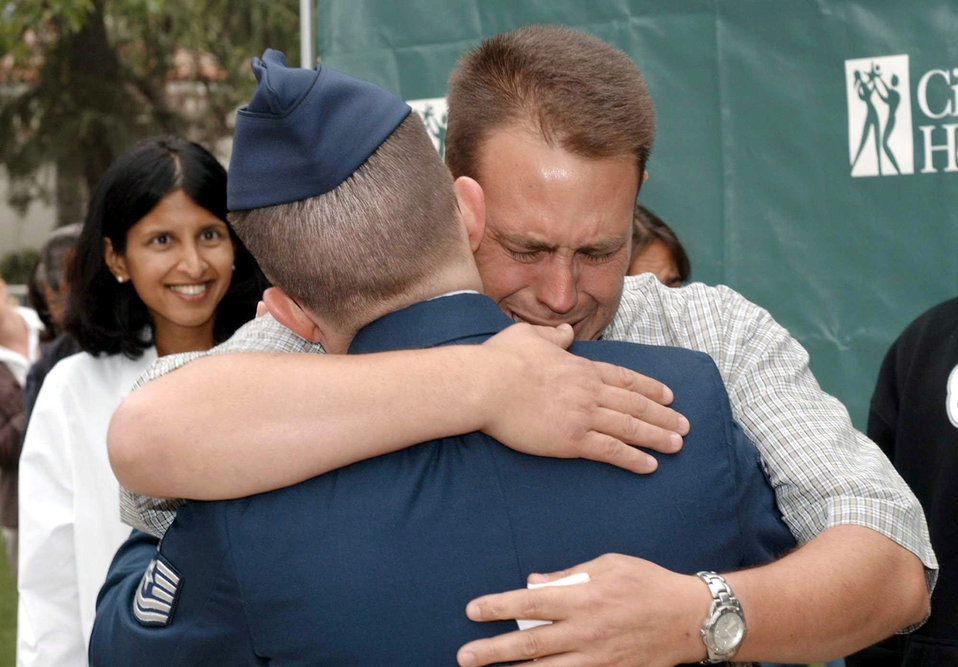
Thank you

DUARTE, Calif. -- Cancer survivor Gregg Smith hugs Tech. Sgt. Daniel MacDonald, his bone marrow donor. MacDonald donated bone marrow to Smith on Oct 16, 2001, but only met him recently.